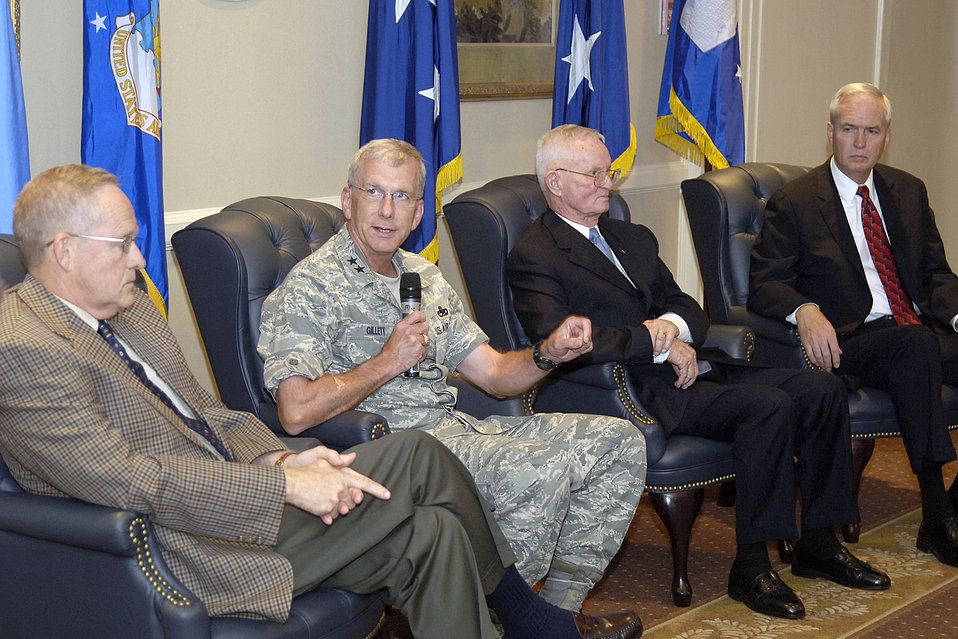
Logistics leaders address Air Force future

Past and present Air Force logistics leaders answer questions from the audience during a recent panel discussion following a Logistics Officer Association luncheon at Tinker Air Force Base, Okla. From left are retired Lt. Gen. William Hallin, commander of the Warner Robins Air Logistics Center at Robins Air Force Base, Ga., from 1992 to 1995; Maj. Gen. David Gillett, current Oklahoma City Air Logistics Center commander; retired Maj. Gen. William Bowden, OC-ALC commander from 1985 to 1989; and Robert Conner, director of the OC-ALC from 2005 to 2007.